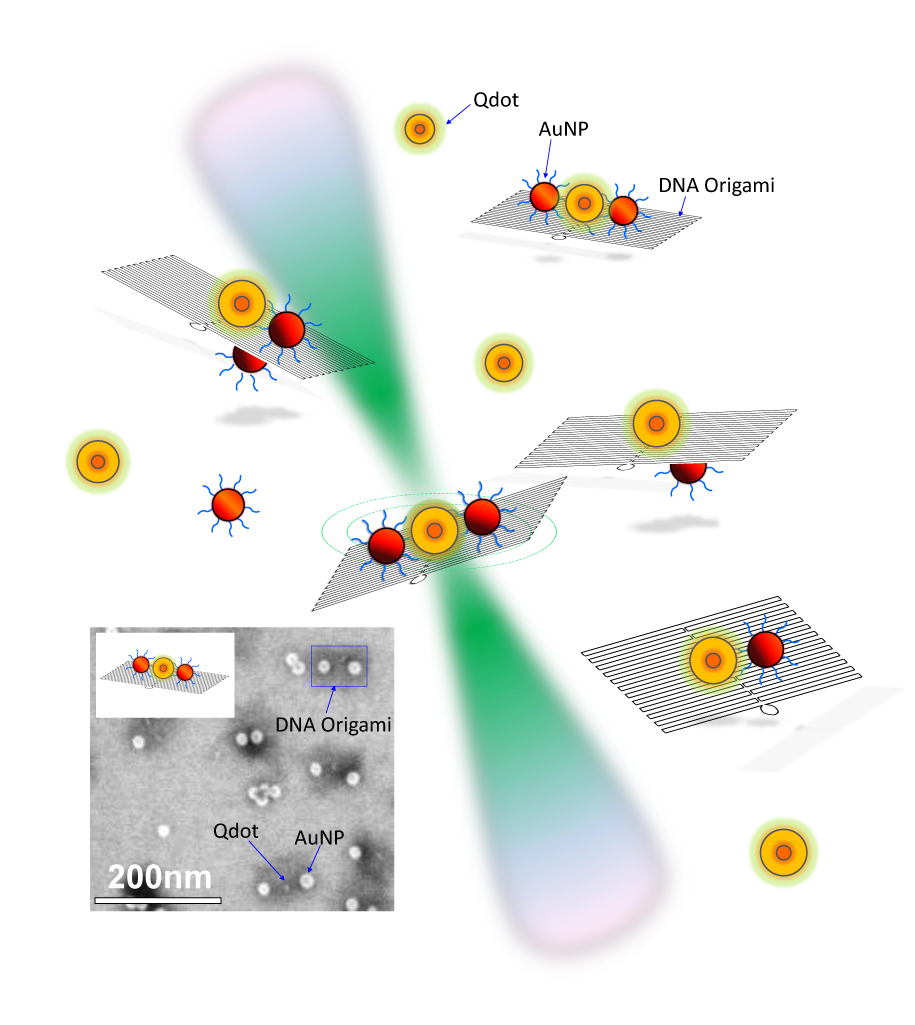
Quantum Dots and Gold Nanoparticles

The NIST team explored the behavior of quantum dots and gold nanoparticles placed in different configurations on small rectangular constructs made of self-assembled DNA (see inset for photograph). Laser light (green) allowed the team to explore changes in the fluorescent lifetime of the quantum dots when close to gold particles of different sizes.